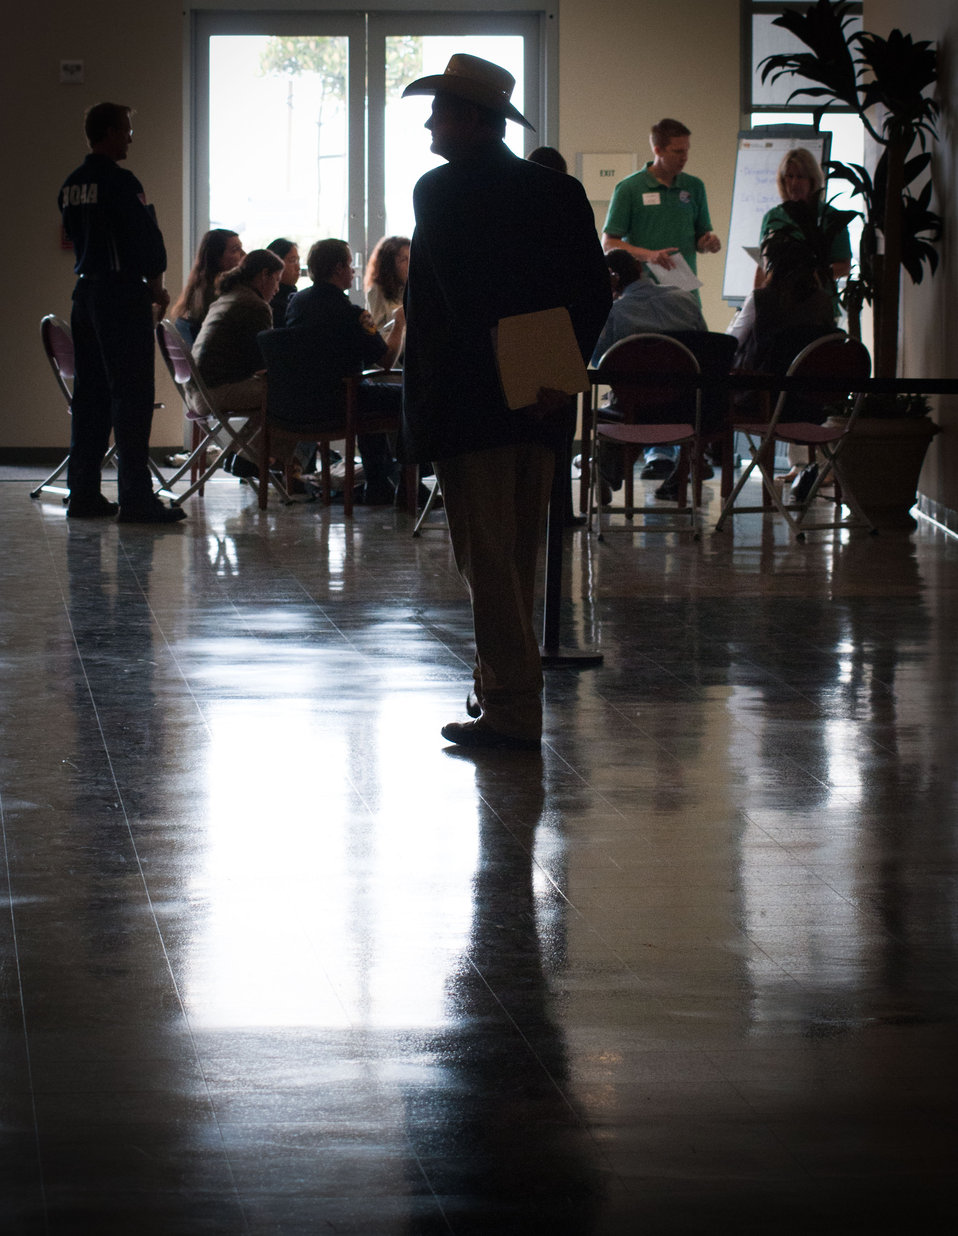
U.S. Department of Agriculture Natural Resources Conservation Service State Conservationist Ed Burton (standing center) and National Oceanic and Atmospheric Administration Monterey Bay National Marine Sanctuary Superintendent Paul Michel, stay outside of groups to listen to what this group and facilitator Bureau of Land Management's Sky Murphy (standing, green shirt) are discussing during the America’s Great Outdoors Initiative (AGO) Monterey Bay Pilot Area Focus Session in the City of Watsonville’s Civic Plaza in California, on Friday, June 17, 2011. Federal and state resource management agencies came together to identify partnership opportunities and determine actions for protection and enhancement of water quality and publicize voluntary stewardship in the watersheds that drain into the Monterey Bay National Marine Sanctuary. This area includes the counties of San Mateo, Santa Cruz, Santa Clara, San Benito, Monterey, and San Luis Obispo. Key questions identified existing multi-county or multi land use partnerships; what is not being done; possible partnerships - collective resources to maximize the benefits to natural resources and communities; and additional resources that organizations can bring to maximize AGO. President Barack Obama signed the initiative on April 16, 2010 to develop a 21st Century conservation and recreation agenda.